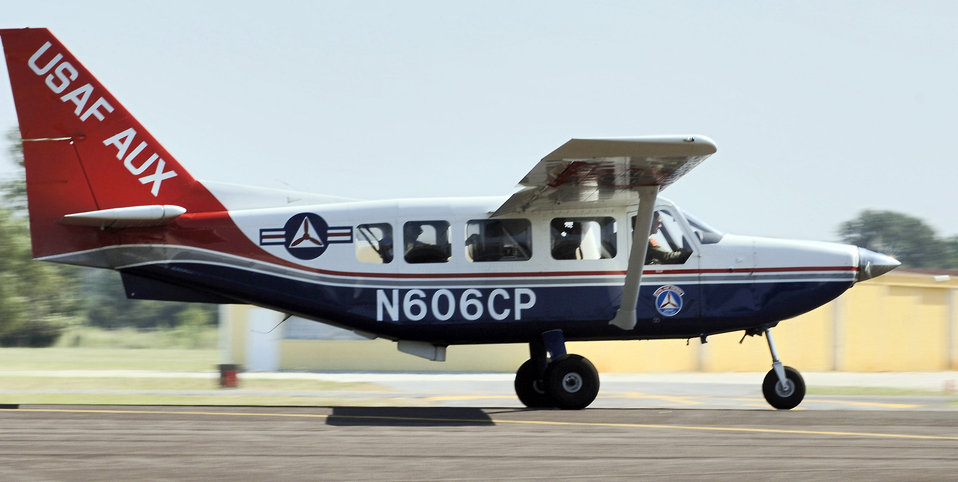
Civil Air Patrol responds

HOUSTON -- A Gippsland Aeronautics GA-8 "Airvan," aircraft accelerates down the runway on take-off. It is one of the Civil Air Patrol aircraft that came to West Houston Airport to support the assessment of Hurricane Rita. The GA-8 is the latest aircraft in the CAP inventory.